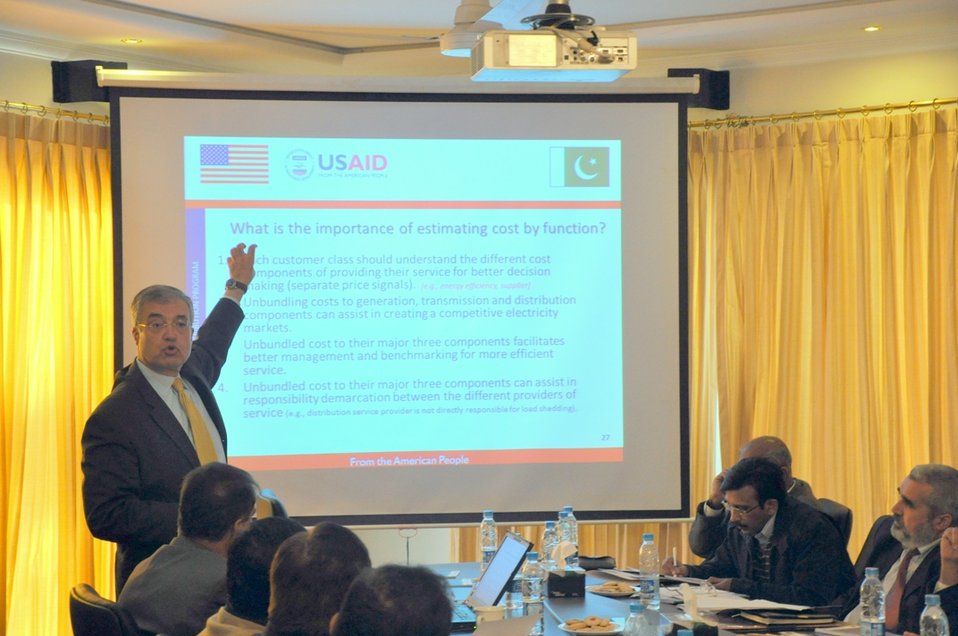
9 Dec - Workshop on Cost of Service and Tariff Design

The USAID Power Distribution Program is developing a ‘Cost of Service & Tariff Design’ to be implemented at one DISCO and then replicated at all other DISCOs. The initial version of the Tariff Design was presented to DISCO Senior Managers from all 9 DISCOs in a workshop held on 9th Dec 2011 in Islamabad so that the suitability of the design could be determined for each DISCO and future work plans could be developed.